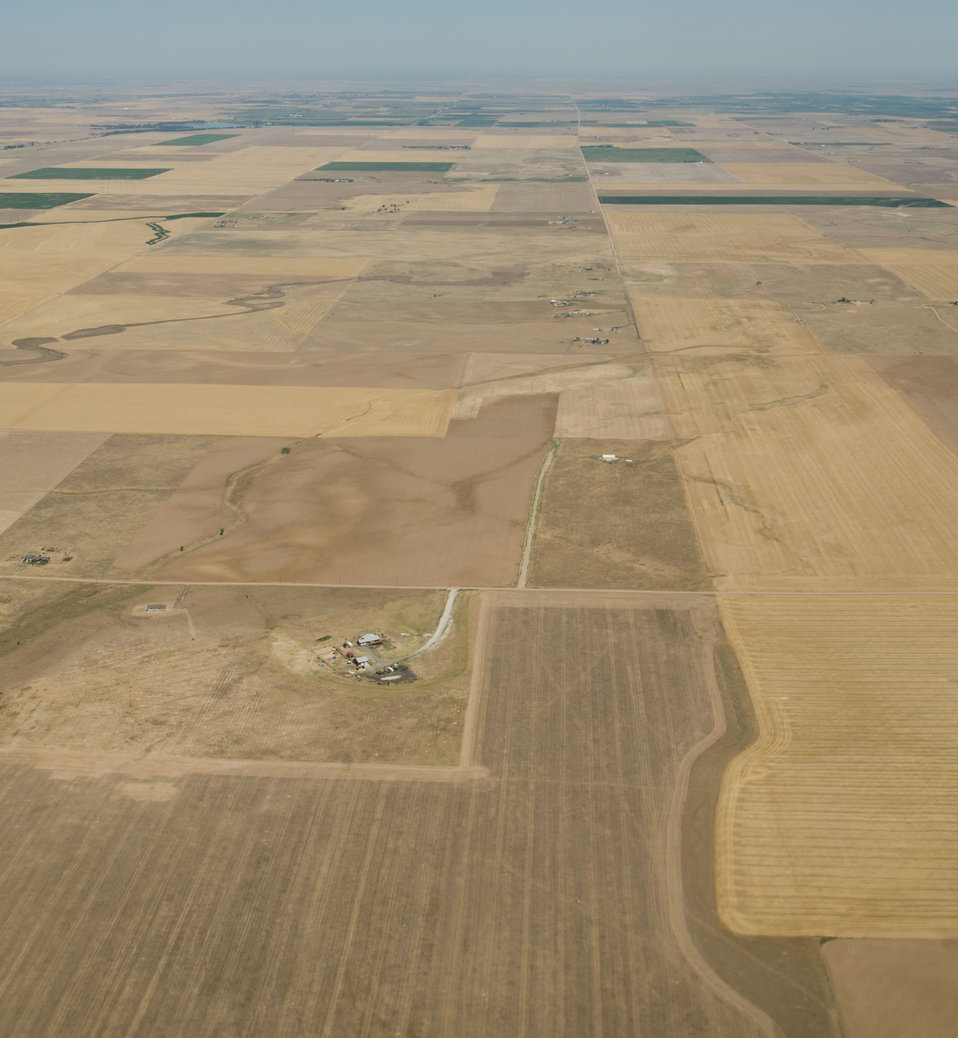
Aerial views of drought affected Colorado farm lands, 74 miles east of Denver, Colorado on Saturday, July 21, 2012.